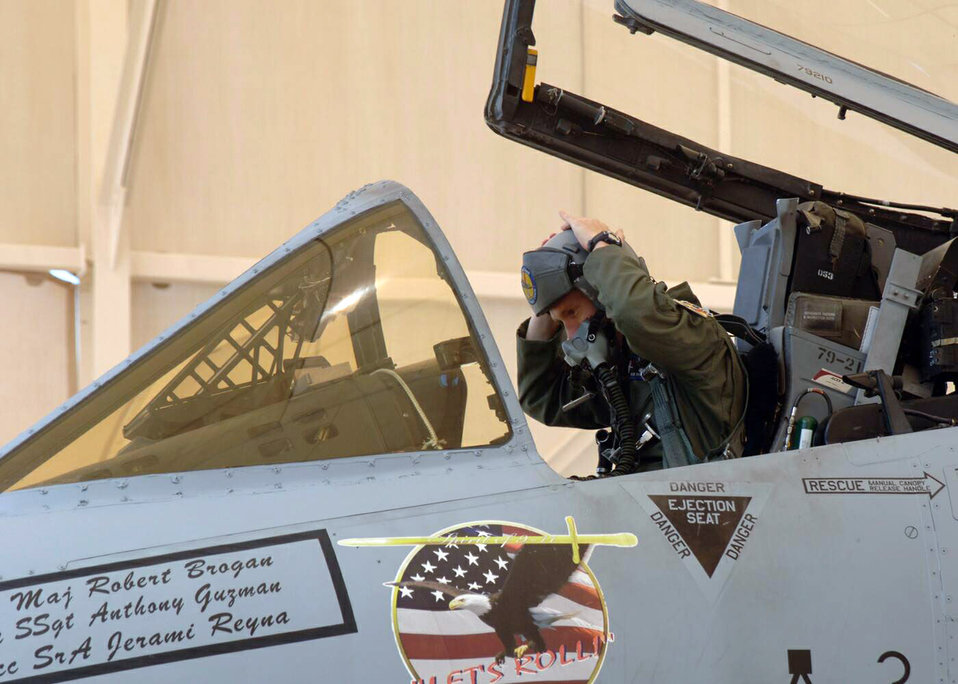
Thunderbolt takeoff

DAVIS-MONTHAN AIR FORCE BASE, Ariz. -- Maj. Rob Brogan prepares for takeoff in an A-10 Thunderbolt II. He is a West Coast demonstration team pilot assigned to the 355th Operations Group here.